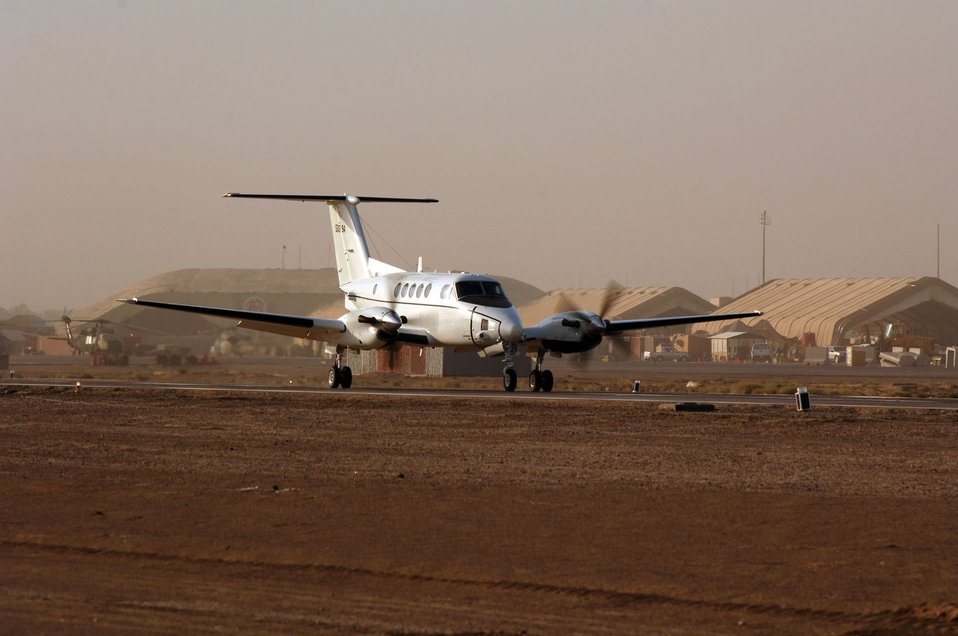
New runway at Balad

BALAD AIR BASE, Iraq -- An Army C-12 lands on the new runway here. The second runway opened Aug. 15 because Balad’s main runway began to deteriorate from constant use.